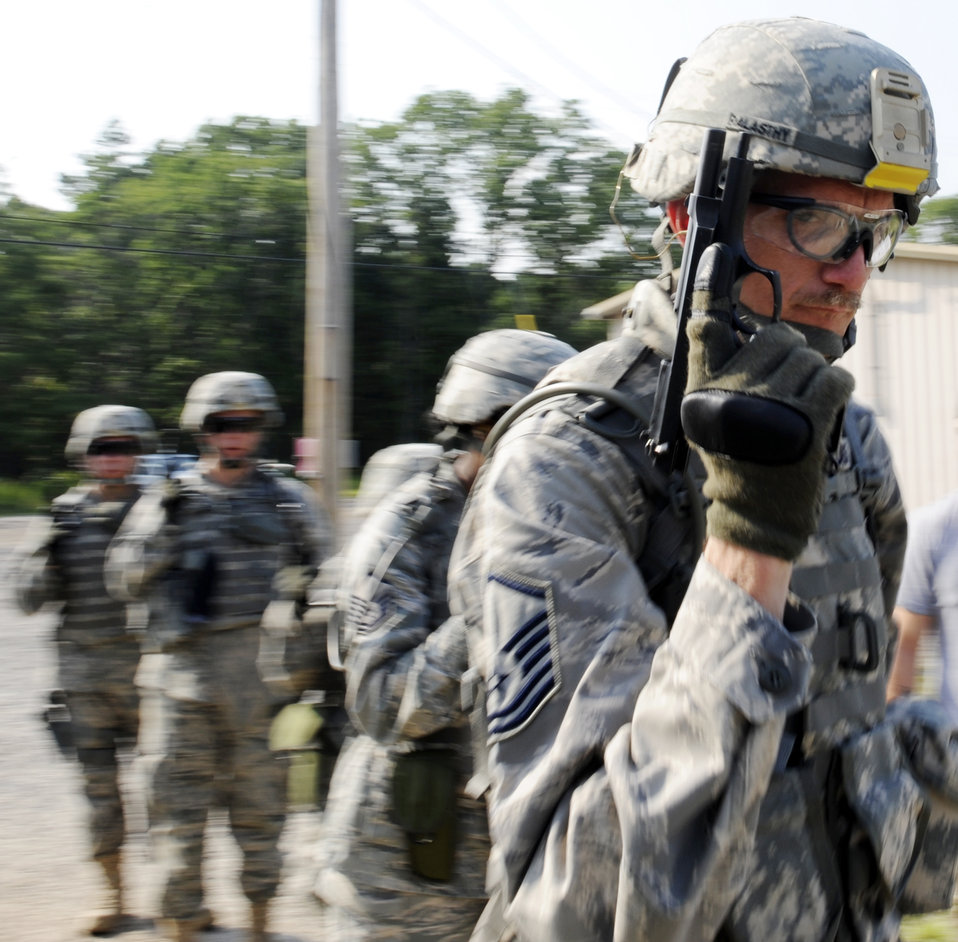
Airmen prepare for deployment

Master Sgt. Edward Palasthy enters the firing range during 9mm familiarization training Aug. 10 at Fort Dix, N.J. The sergeant is an avionics flight chief assigned to the 16th Electronic Warfare Squadron at Eglin Air Force Base, Fla.